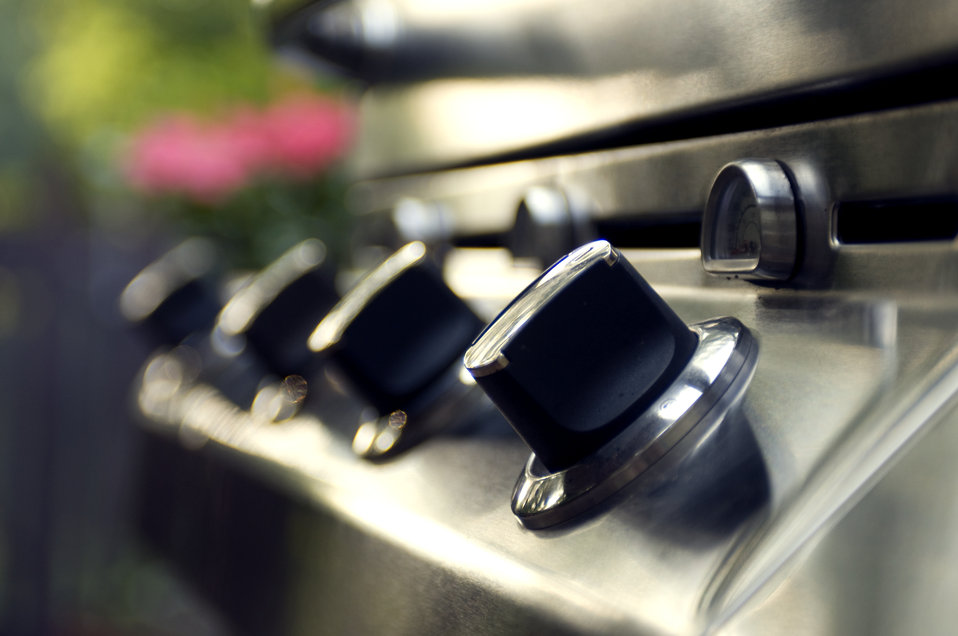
Close-up of a grill

Here we see a close view of a stainless steel outdoor grill's temperature control knobs.